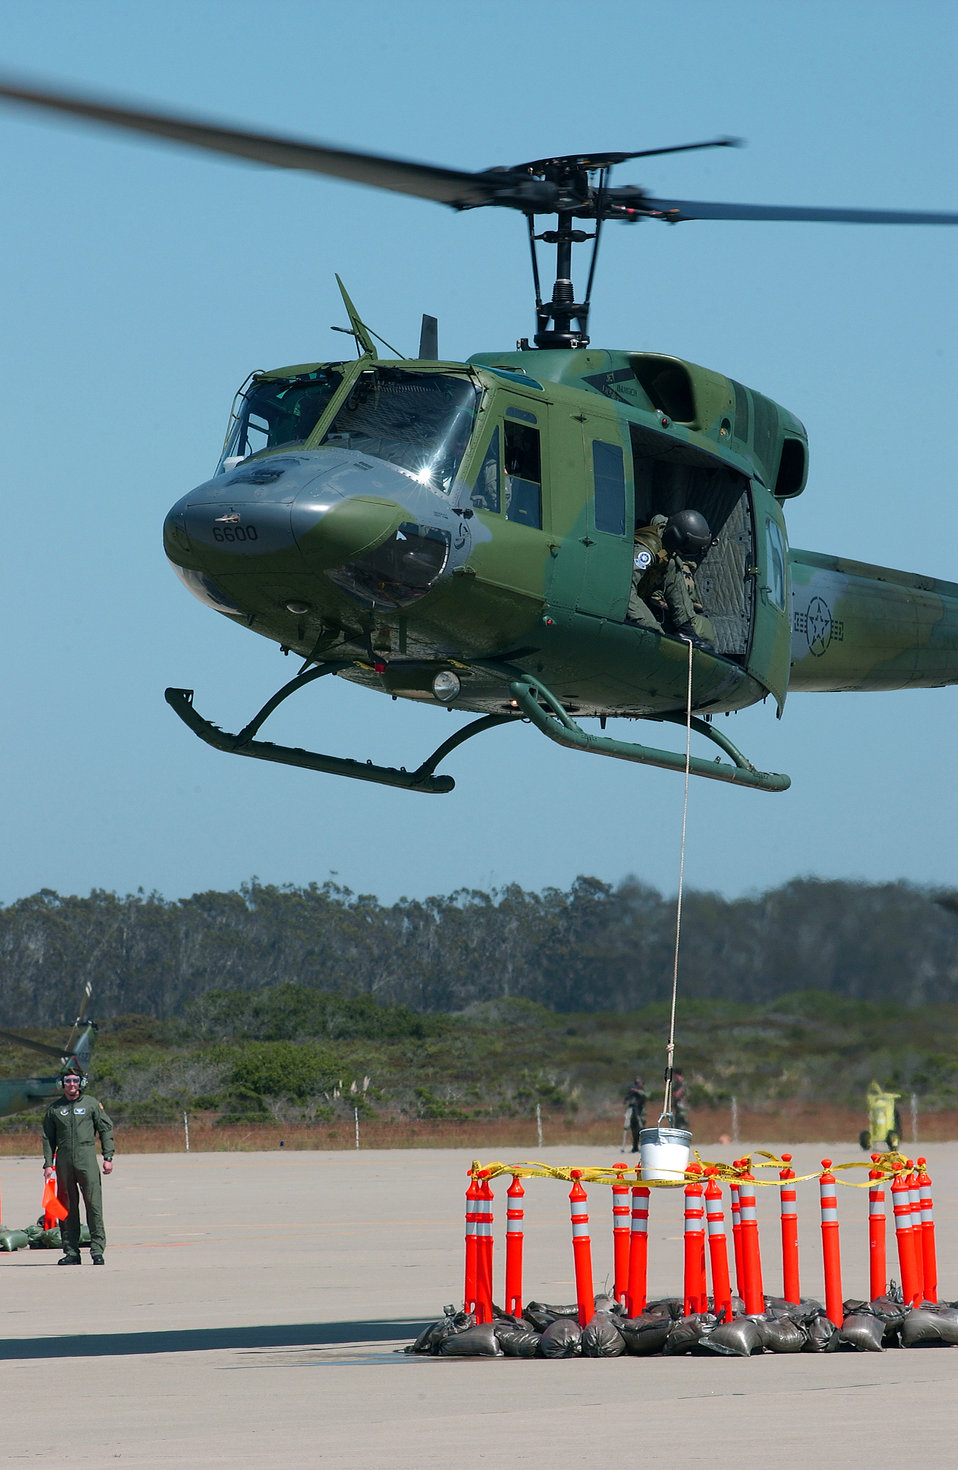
Starting the 'Challenge'

VANDENBERG AIR FORCE BASE, Calif. -- The pilot of a UH-1N Huey helicopter maneuvers his aircraft through an obstacle course here May 4 while being guided by the onboard flight engineer. The helicopter team from the 40th Helicopter Flight at Malmstrom Air Force Base, Mont., is competing in Guardian Challenge, the world's annual premier space and missile competition. The four-day event tests the wartime readiness of Air Force Space Command's Airmen in spacelift, ICBM operations, communications, maintenance, helicopter operations, security forces and food preparation.